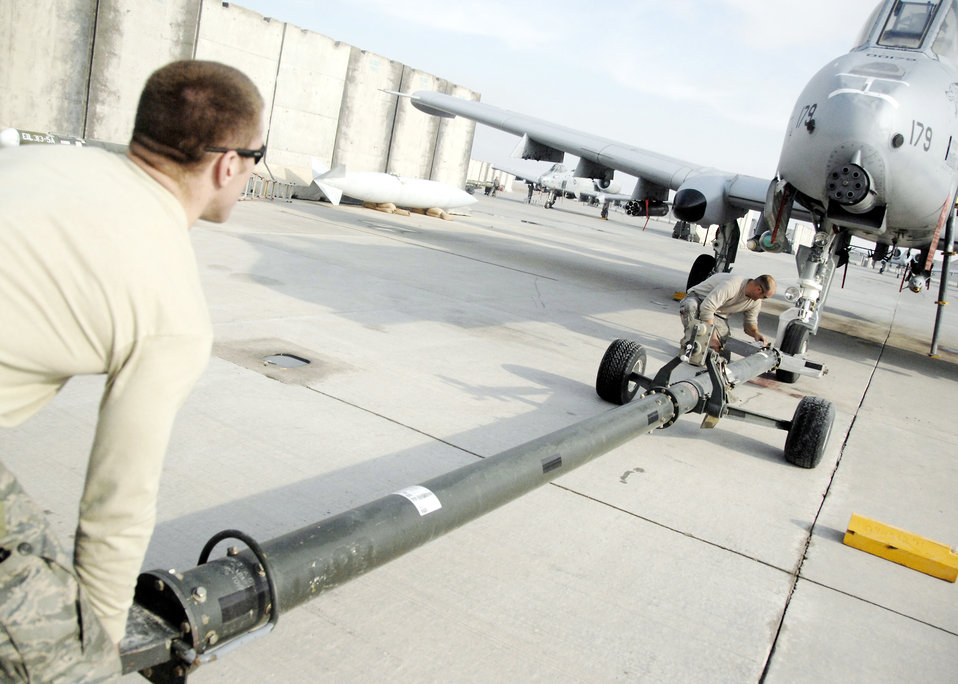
Maintainers keep aircraft soaring

Senior Airman Nathan Tierney (left) and Staff Sgt. Eddie Evans return an aircraft after an in-flight emergency Dec. 10, 2009, at Kandahar Airfield, Afghanistan. Airman Tierney and Sergeant Evans are A-10 crash recovery technicians with the 451st Expeditionary Maintenance Squadron maintenance flight.